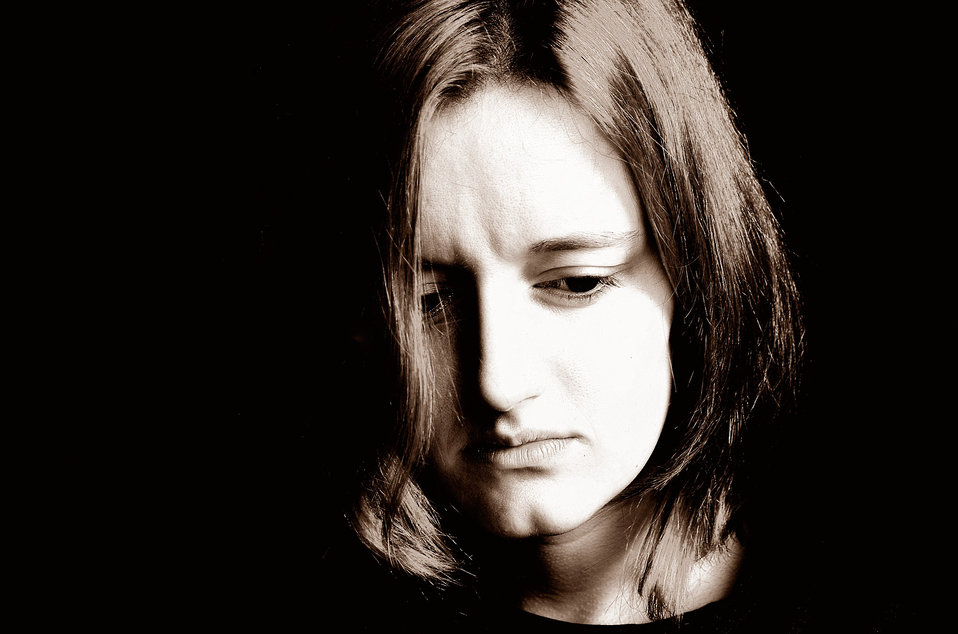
Sad woman - portrait.